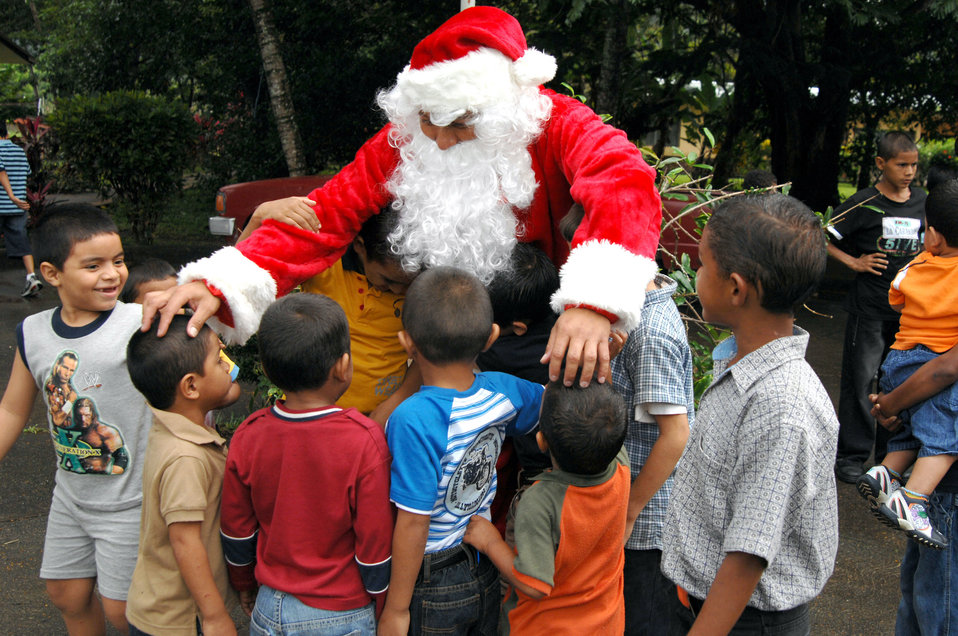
Santa pays an early visit

Santa Claus greets the children at Aldea Infantil S.O.S orphanage in La Ceiba, Honduras, during